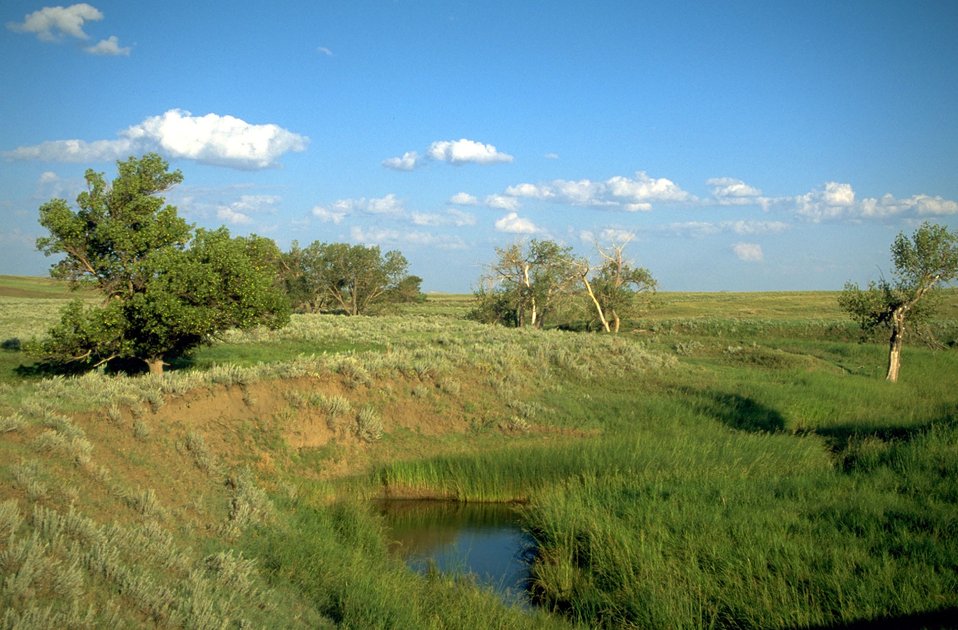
Moreau River near the Harding County line